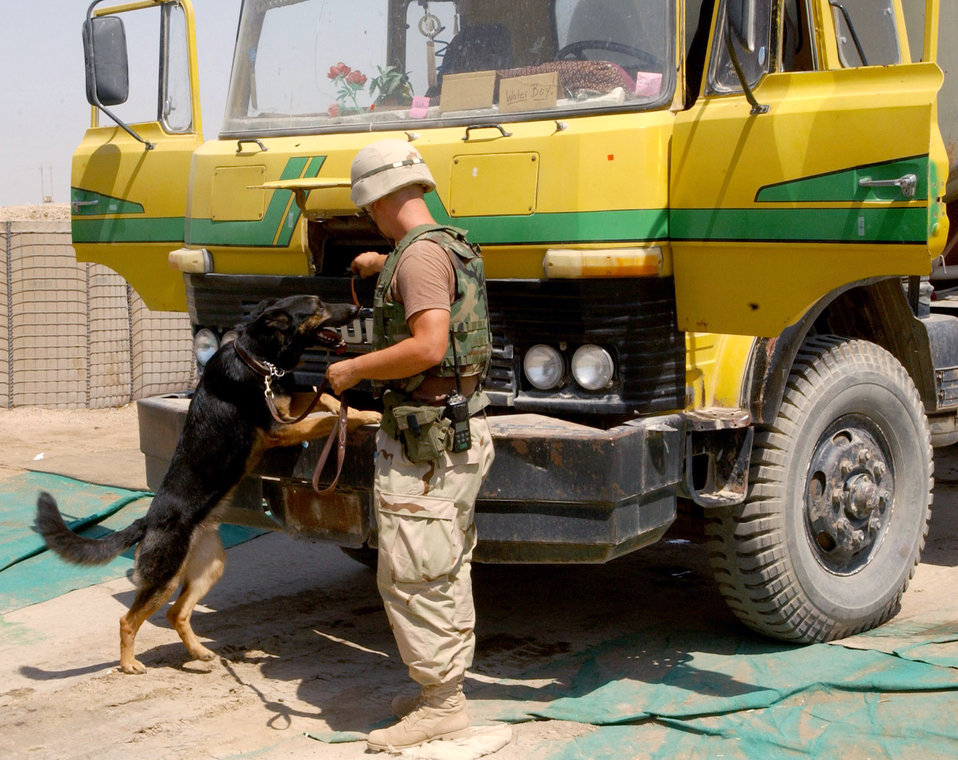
Checkpoint

BAGHDAD, Iraq -- Staff Sgt. Dan Hartley, 447th Expeditionary Security Forces Squadron military working dog handler, and military working dog, Cody, check for explosives on a vehicle at a Baghdad International Airport checkpoint. They are one of several military working dog teams here supporting Operation Iraqi Freedom. Hartley and Cody are both deployed from the 66th Security Forces Squadron at Hanscom Air Force Base, Mass.